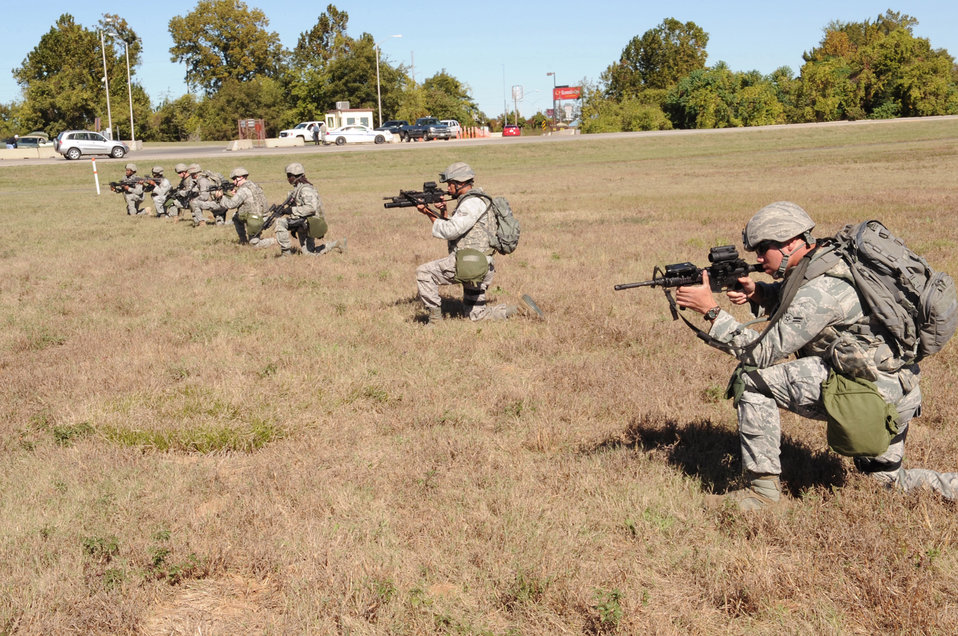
Barksdale Airmen prepare for Global Strike Challenge

Airmen from the 2nd Security Forces Squadron perform tactical movements during a training exercise Nov. 4, 2010, at Barksdale Air Force Base, La. The Airmen are preparing for the four-day Global Strike Challenge competition.